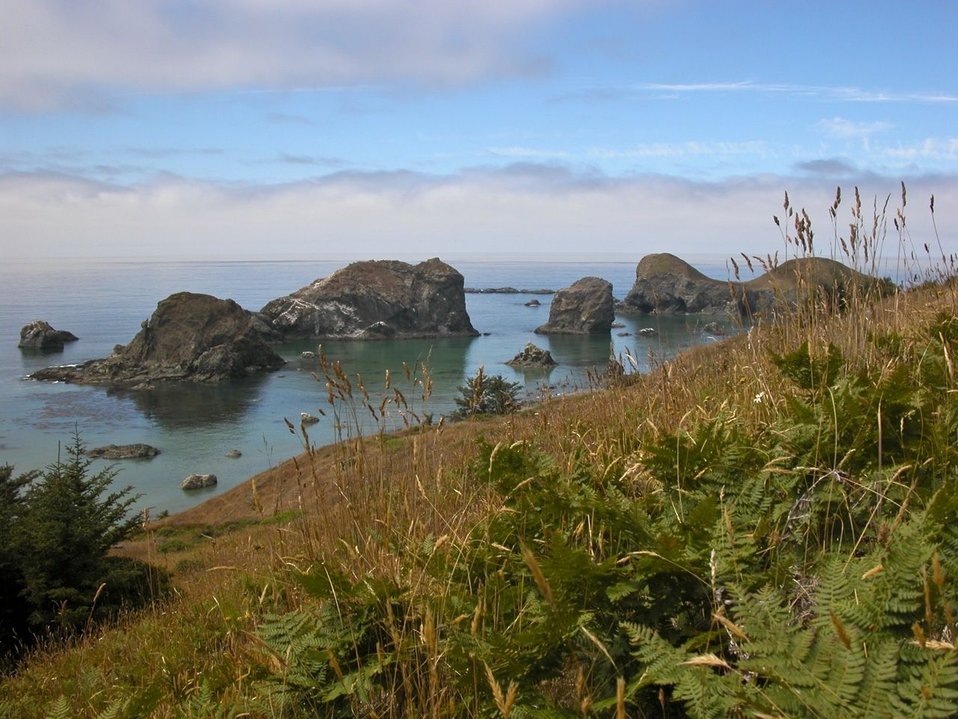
Crook Point OR Coastal Refuge Complex Roy W. Lowe USFWS

View of seabird colonies from the Crook Point Unit of Oregon Islands National Wildlife Refuge.